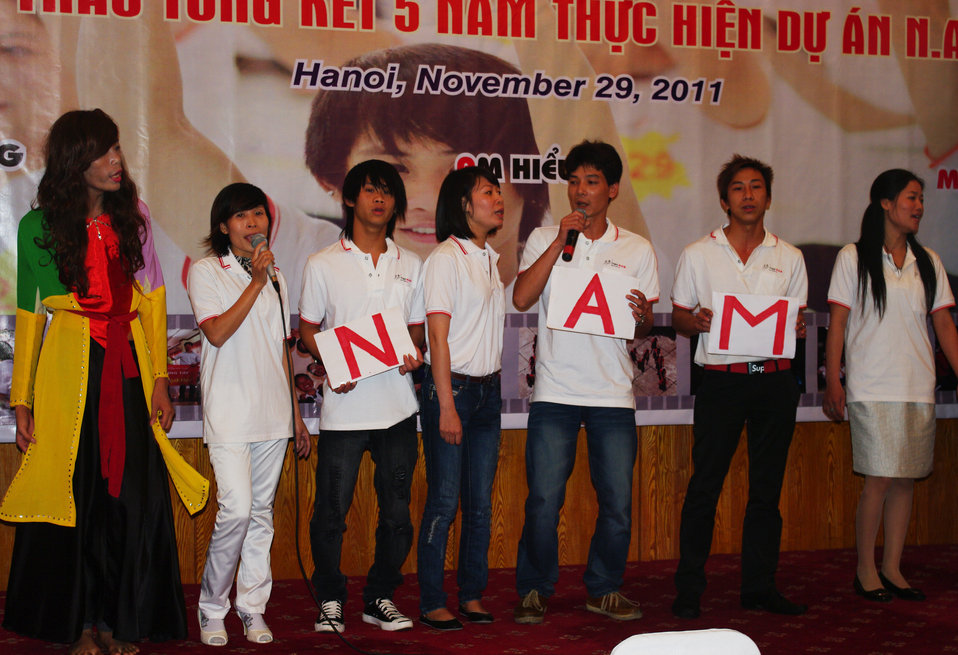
USAID Supports HIV Awareness among Street Youth and Young Men

Trainers and peer educators tell their stories on November 29, 2011, in Hanoi, Vietnam